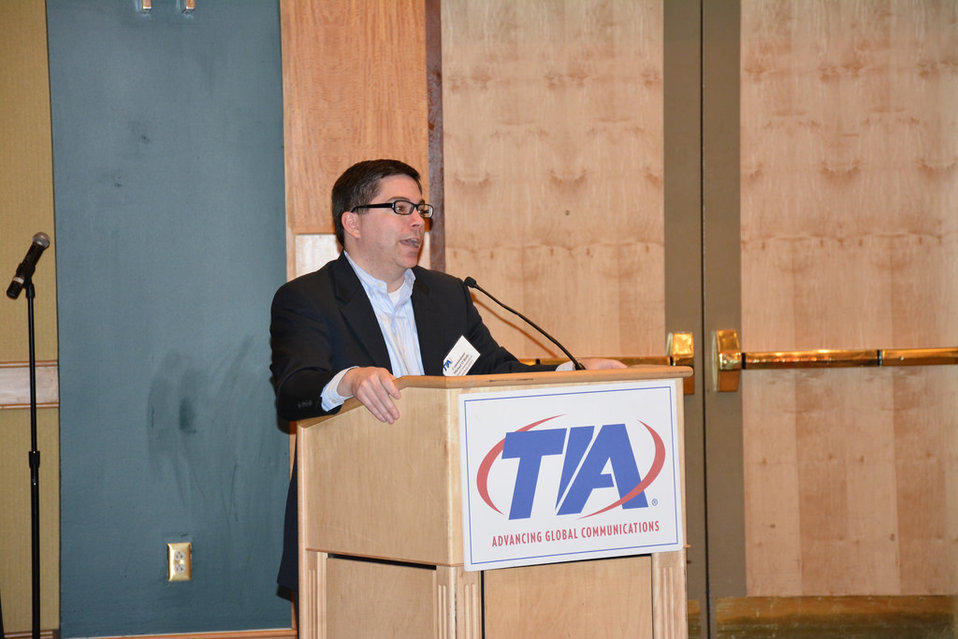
4.11.2014 TIA Spring Policy Summit

Commissioner O'Rielly speaking at the TIA Spring Policy Summit, 4/11/14